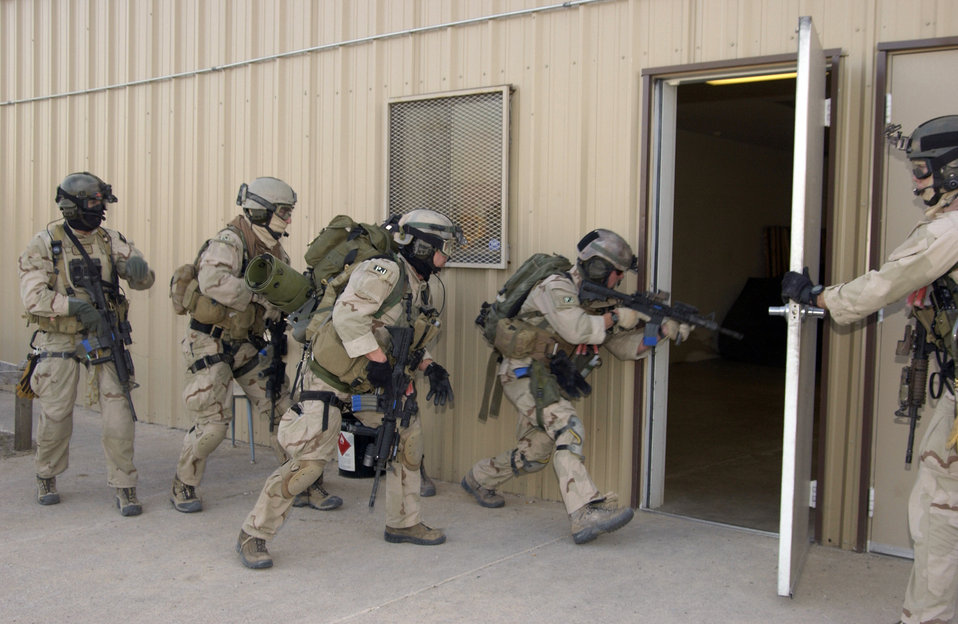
Extraction exercise

DAVIS-MONTHAN AIR FORCE BASE, Ariz. (AFPN) -- Pararescuemen from the 306th and 48th Rescue Squadrons enter a building to retrive